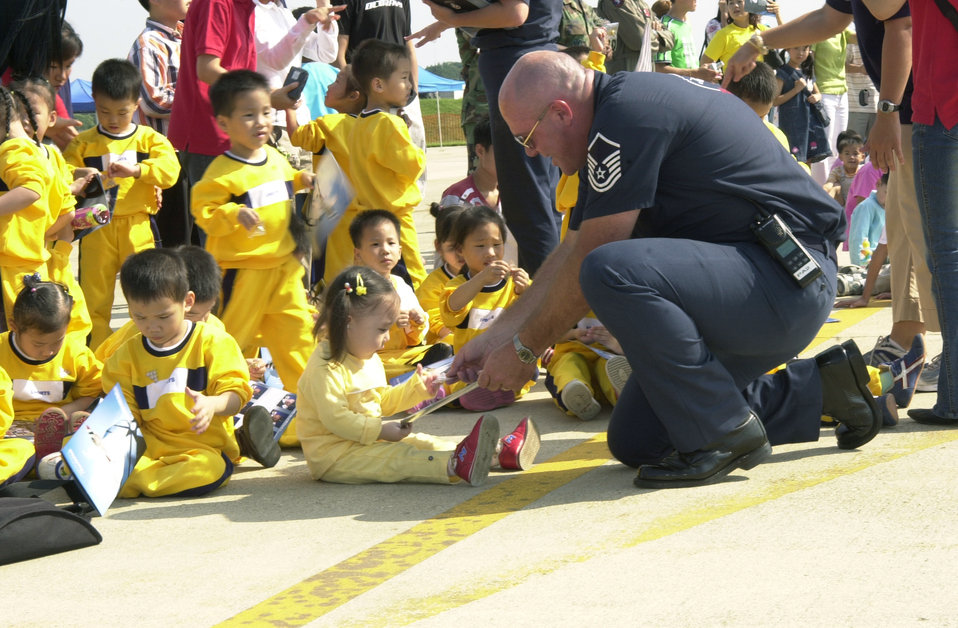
She saw a sign

KUNSAN AIR BASE, South Korea -- Master Sgt. George Jozens signs autographs for local children during a special meet and greet for South Korean orphans Sept. 16. More than 280 children watched the Thunderbirds demonstration team practice for their Sept. 17 air show here. Sergeant Jozens is with the Thunderbirds public affairs office.